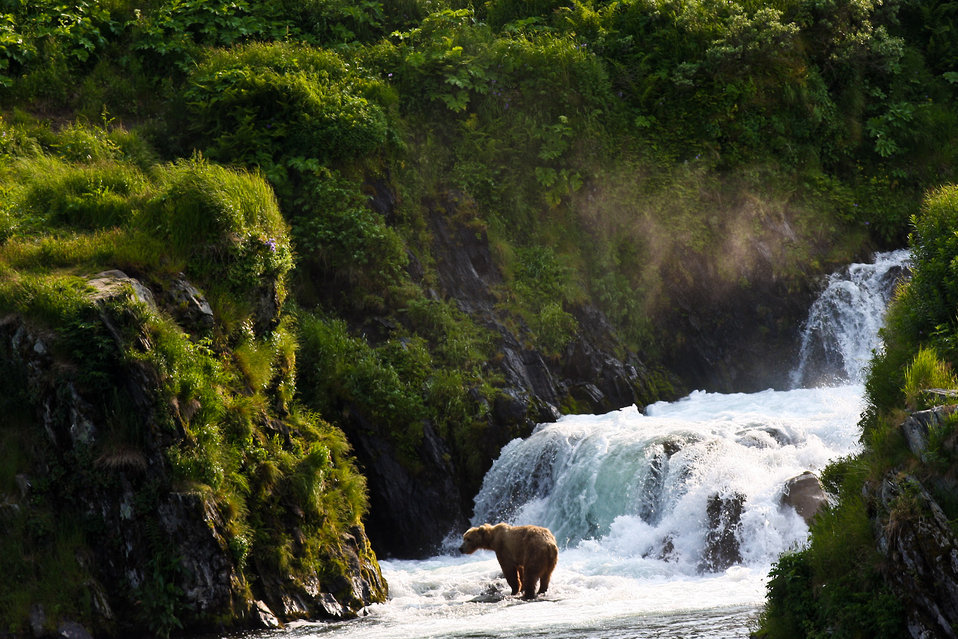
Kodiak brown bear in Dog Salmon Falls

Lisa Hupp/USFWS